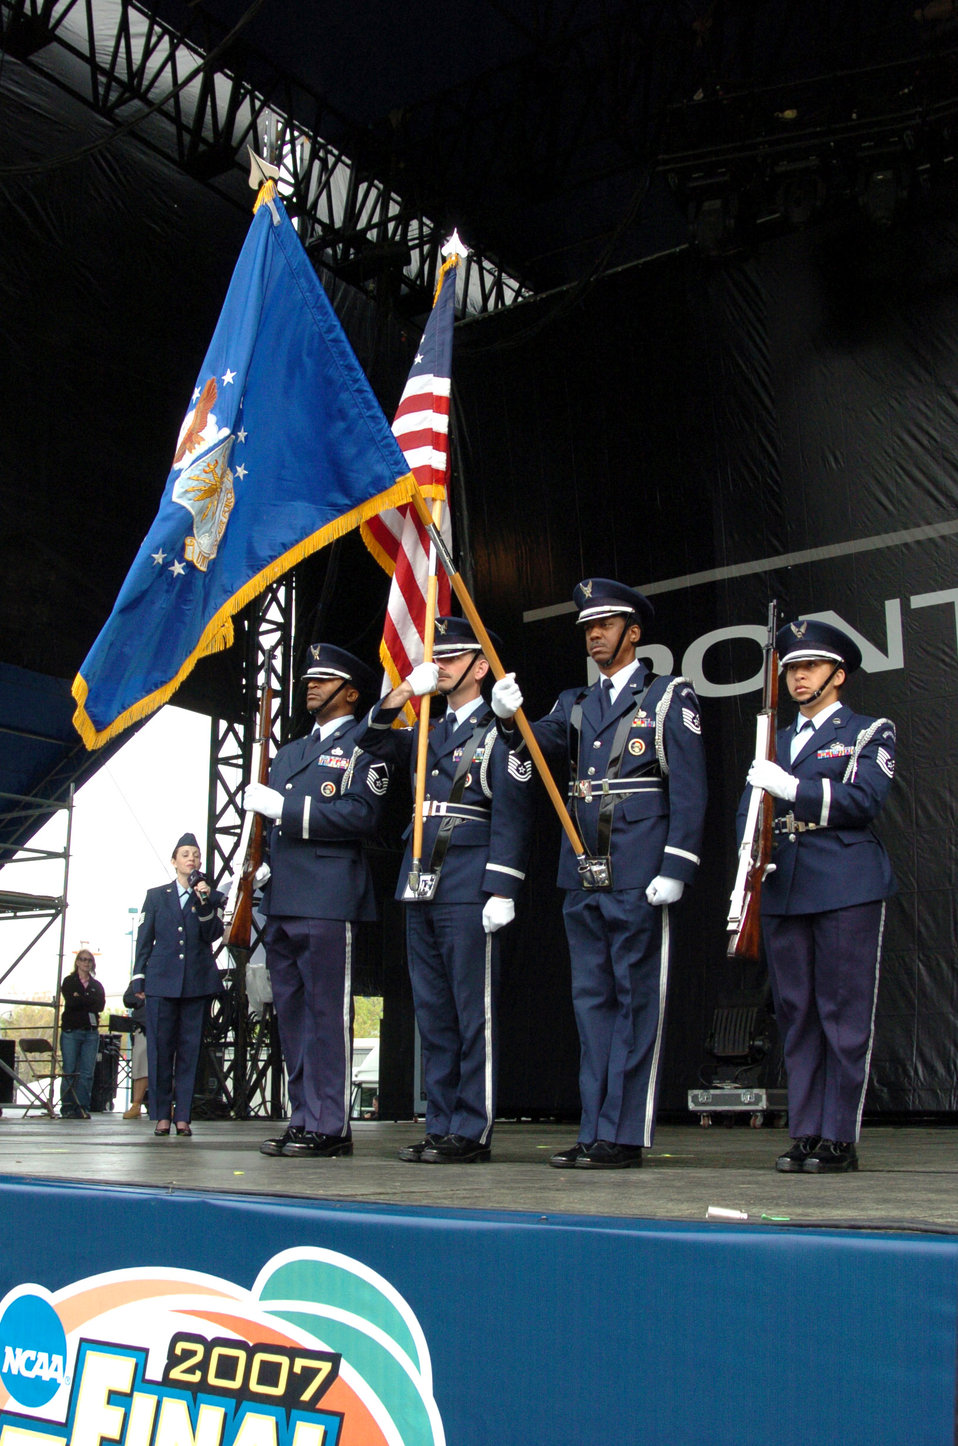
Air Force featured at Final Four

The 94th Airlift Wing Honor Guard present the colors during the singing of